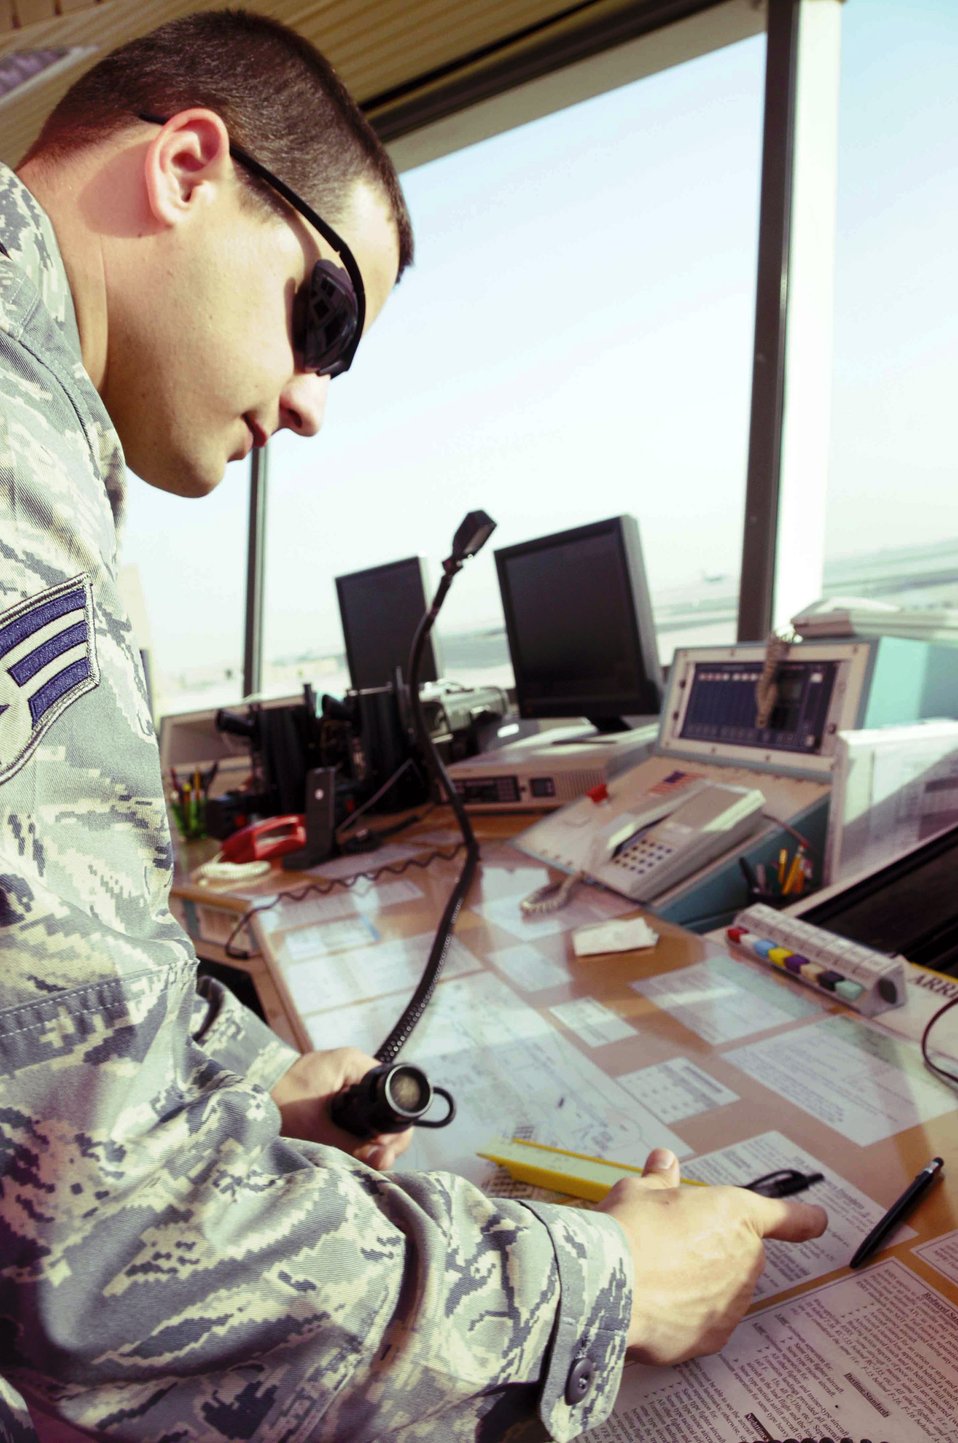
Air traffic controllers keep aircraft soaring

Senior Airman Eric Kindle logs an accurate departure time for an aircraft April 15 from the air traffic control tower at a Southwest Asian air base. As an air traffic control journeyman, Airman Kindle ensures aircraft taking off or landing do so safely and quickly.